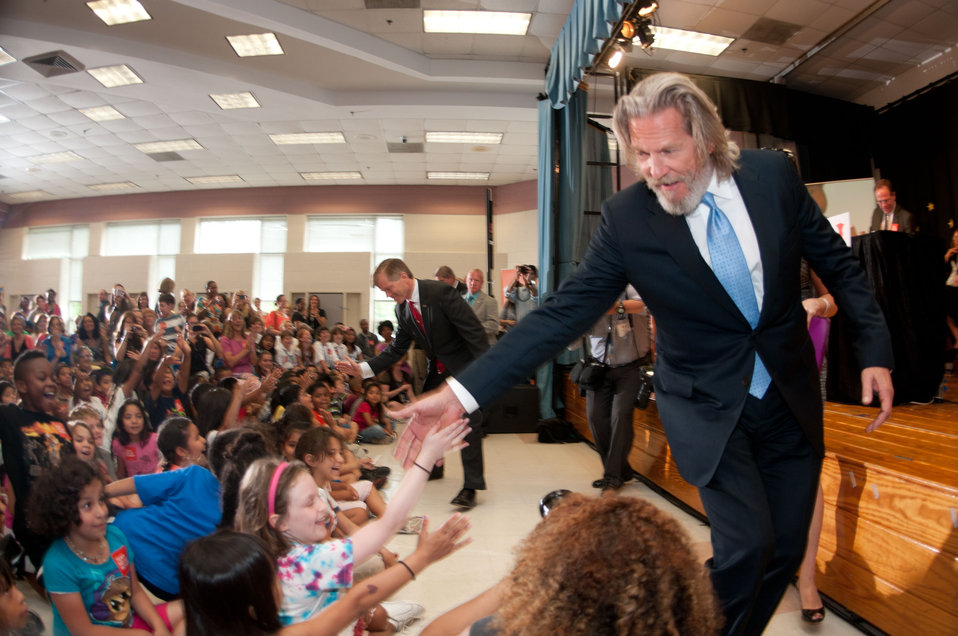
Academy Award Winner and No Kid Hungry National Campaign Spokesperson Jeff Bridges, and other speakers at the Virginia No Kid Hungry Campaign launch, shake the hands of students at the Barcroft Elementary School in Arlington, VA, on Tuesday, June 7, 2011. One of the speakers, Agriculture Secretary Tom Vilsack said, “ We know our strength comes from out partnerships…” Campaign partners include Share our Strength, the Federation of Virginia Food Banks, corporate partners, education leaders, government agencies and community organizations. The Virginia Summer Meals for Kids Program is funded by the USDA and provides free summer meals at hundreds of sites across the Commonwealth of Virginia, but according to a new report released today by the Food Research and Action Center, more than 80 percent of those eligible do not participate. Governor McDonnell (behind Bridges) announced and stressed that all parents who want free meals for their kids in need, can simply call 211 to find a summer meals site near them.